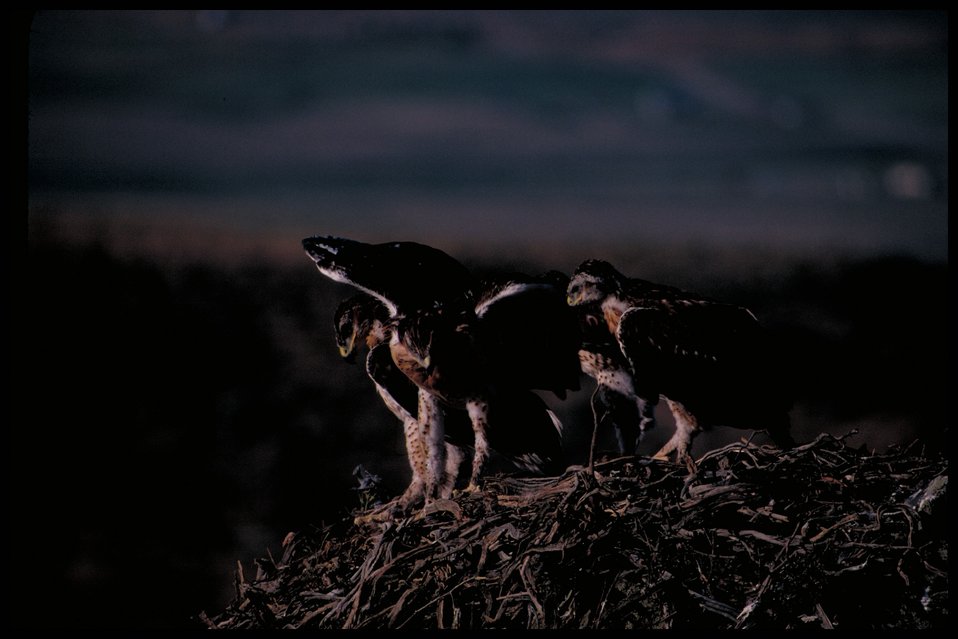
Ferrugenous Hawks Birds of Prey National Conservation Area BOP Owyhee Field Office LSRD Lower Snake River District